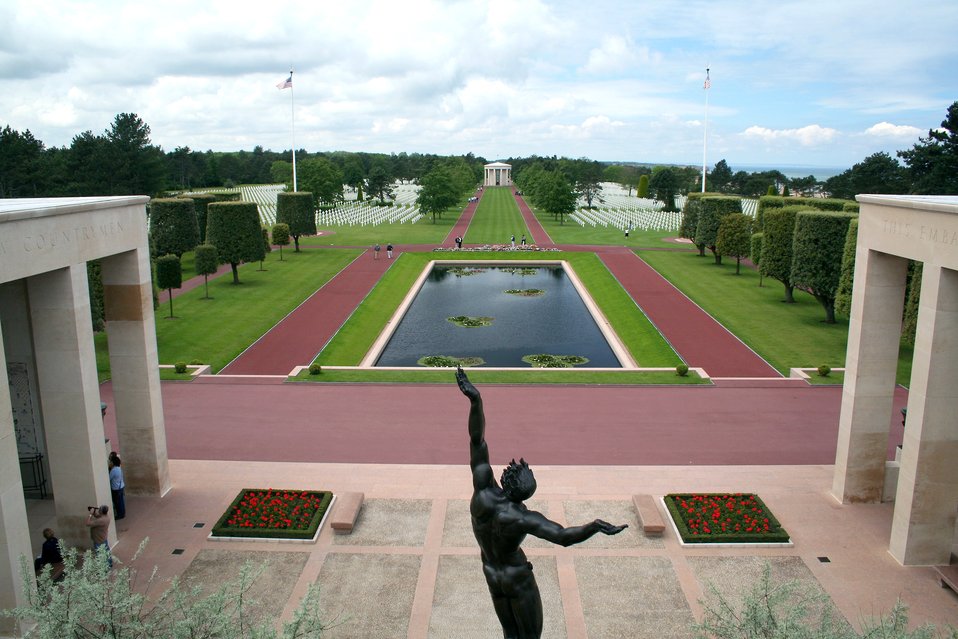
Commission maintains U.S. military cemeteries overseas

The American Battle Monuments Commission maintains the U.S. cemetery in Normandy, France. The cemetery is situated on a cliff overlooking the English Channel. The 172-acre cemetery contains the graves of 9,387 U.S. servicemembers, most of whom died on D-Day, June 6, 1944.